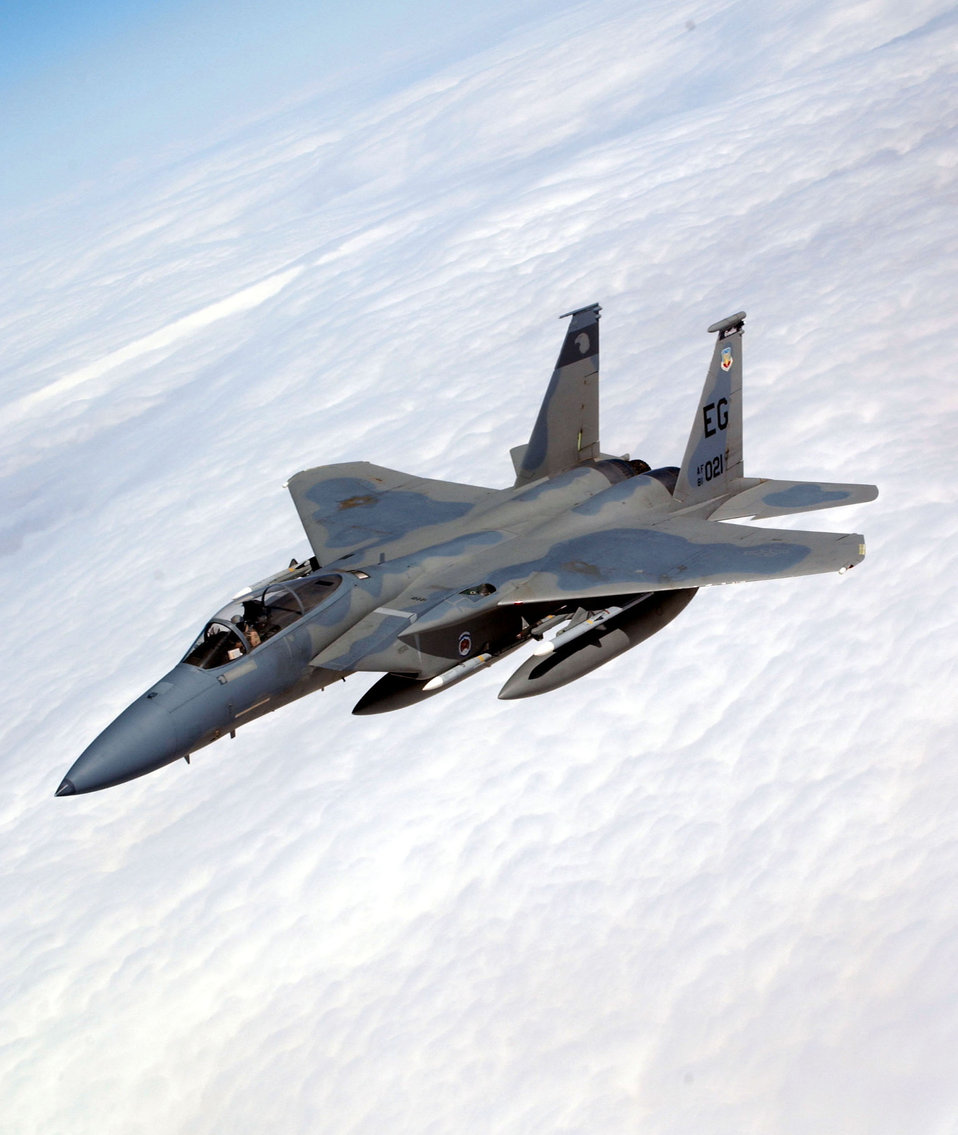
Eagle in flight

OPERATION IRAQI FREEDOM -- An F-15C Eagle turns away from a tanker aircraft after receiving a full fuel load high over the deserts of Southwest Asia. The F-15 is from the 33rd Fighter Wing, Eglin Air Force Base, Fla.